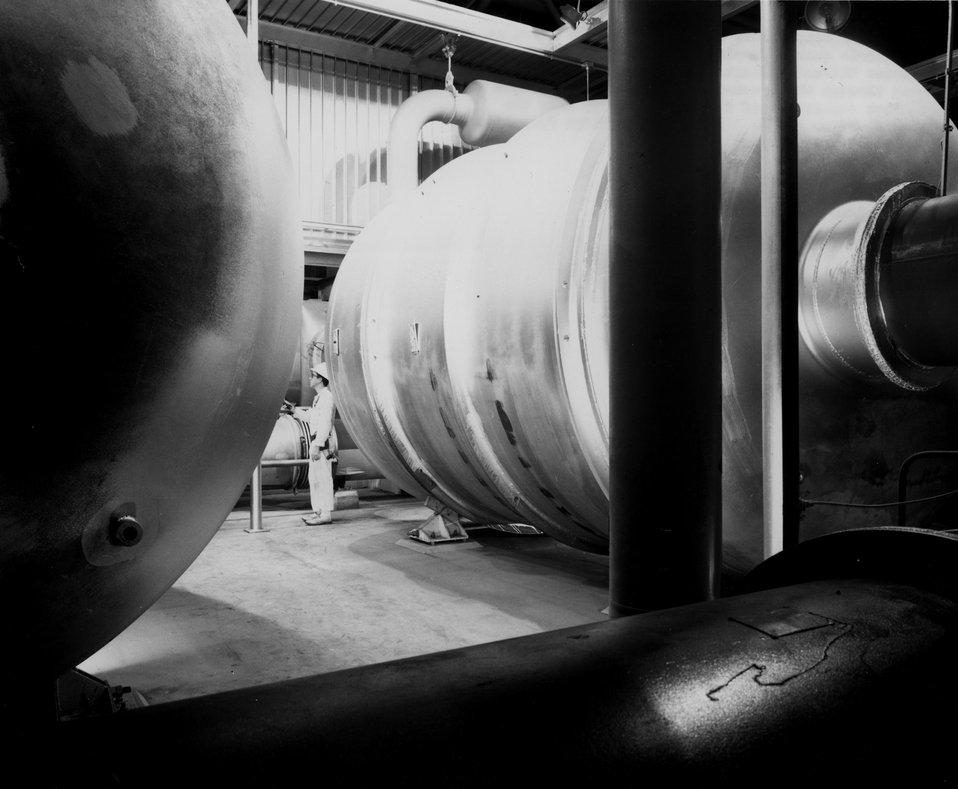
Large size compressors and converters are shown at the Atomic Energy Commission's Oak Ridge (Tenn.) Gaseous Diffusion Plant. c. 1972